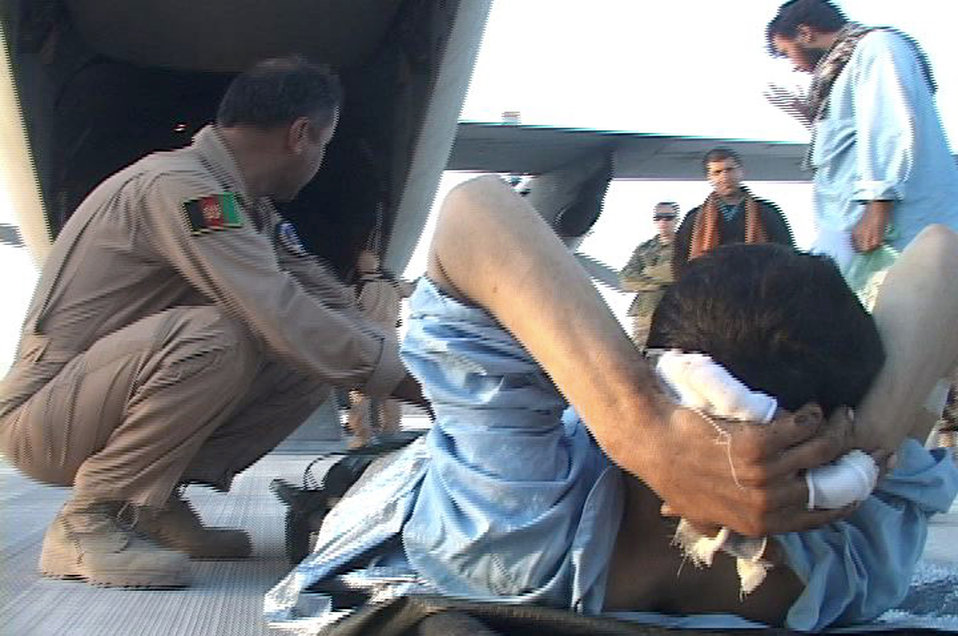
Saving lives

Afghan airmen prepare to load an injured Afghanistan National Security Forces soldier onto a C-27 Spartan aircraft Jan. 26, 2011, for a medical evacuation flight to Kabul, from Kandahar Airfield.